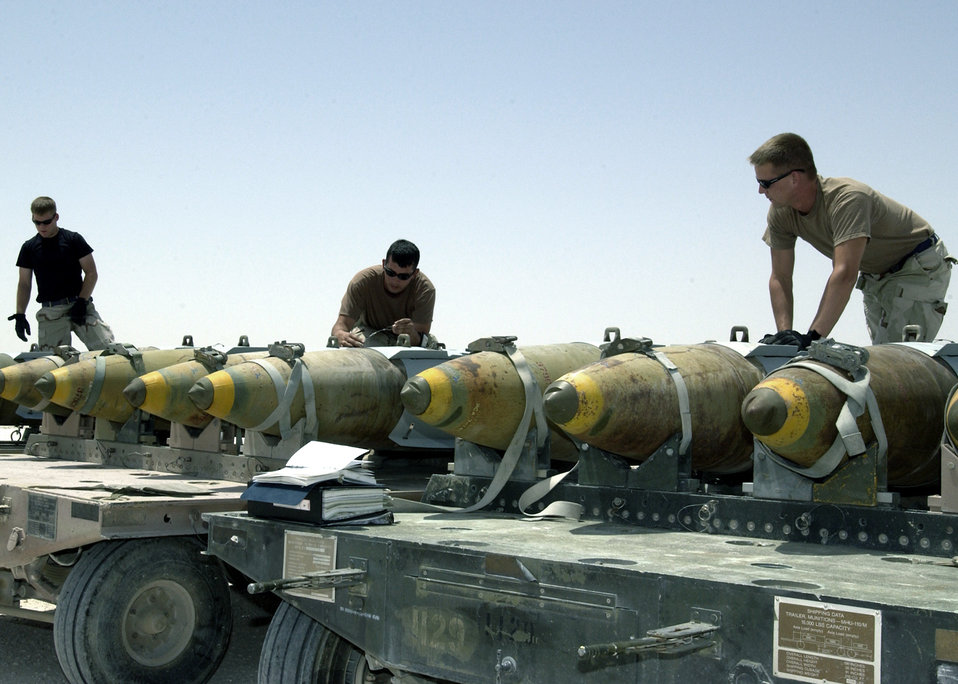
An explosive business

SOUTHWEST ASIA -- (From left) Airman 1st Class Smith Jeter, Staff Sgt. Patrick Navarette and Airman 1st Class Eley Britton inspect Joint Direct Attack Munitions. Airmen Jetter and Britton are deployed from Royal Air Force Lakenheath, England, and Sergeant Navarette is deployed from Aviano Air Base, Italy. They are assigned to the 379th Expeditionary Maintenance Squadron munitions flight at a forward-deployed location.